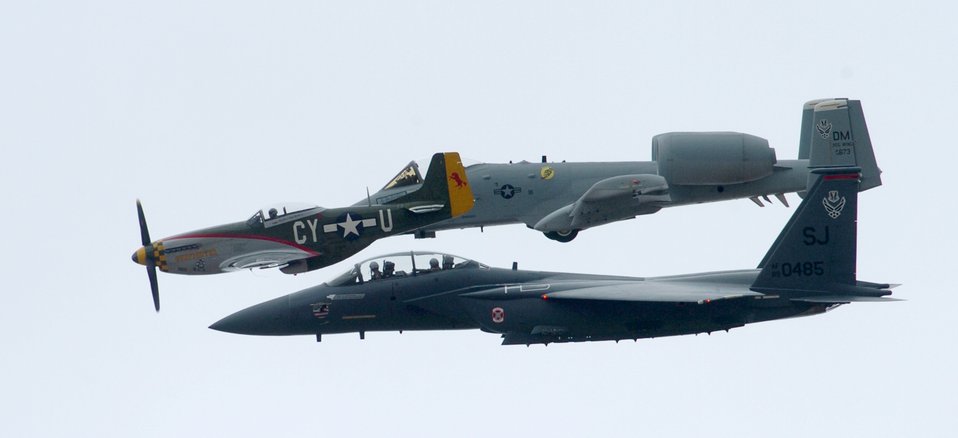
Air Force Week

A P-51 Mustang, an F-15 Eagle and an A-10 Thunderbolt II, fly the heritage formation over